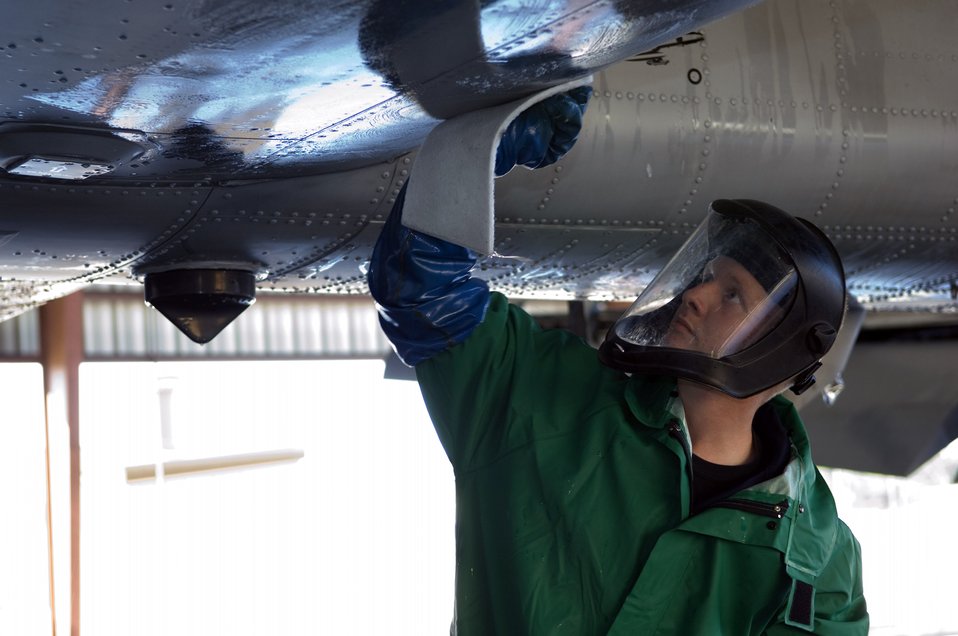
Tooth brush

Airman 1st Class Joshua Norris washes the under-belly of an A-10 Thunderbolt II Nov.19 at the corrosion control wash rack at Moody Air Force Base, Ga. The A-10 receives a thorough wash-down and lubrication every three months to prevent corrosion and to inspect for surface damage. Airman Norris is a 23rd Aircraft Maintenance Squadron A-10 crew chief.